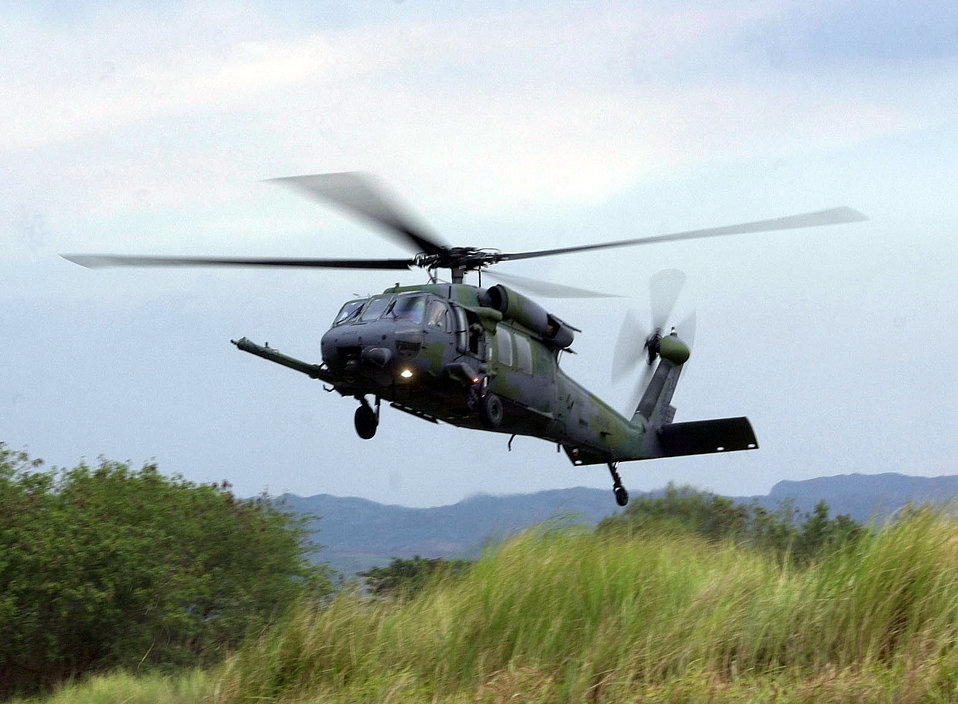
Exercise

BASA AIR BASE, Philippines -- An HH-60 Pave Hawk helicopter from the 33rd Rescue Squadron, Kadena Air Base, Japan, lands at here to evacuate